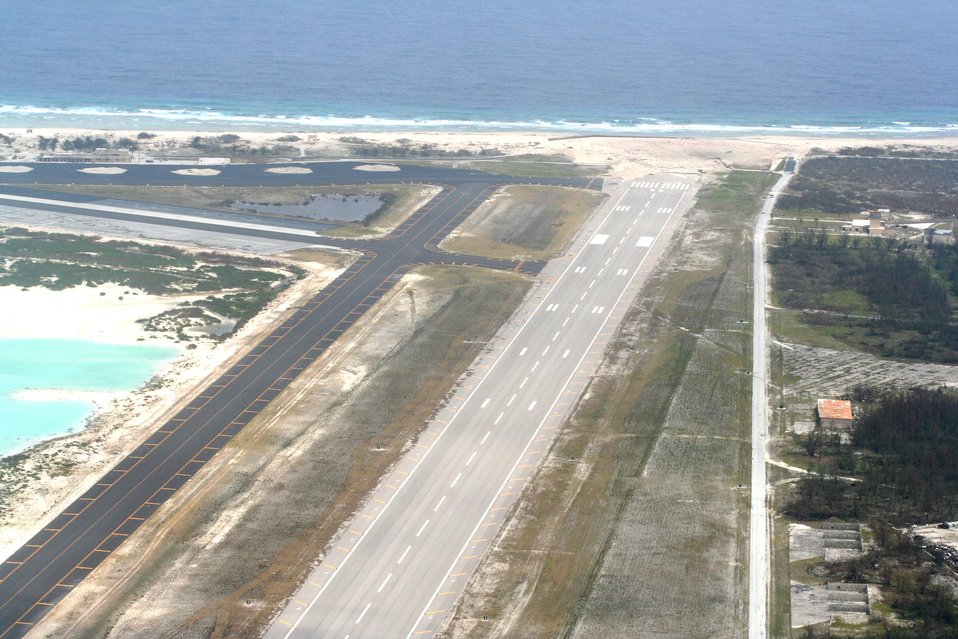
Damage on Wake less than feared, flyover shows

A Coast Guard flyover of Wake Island Sept. 2 shows little apparent damage from Super Typhoon Ioke around the runway and taxiway, officials said.